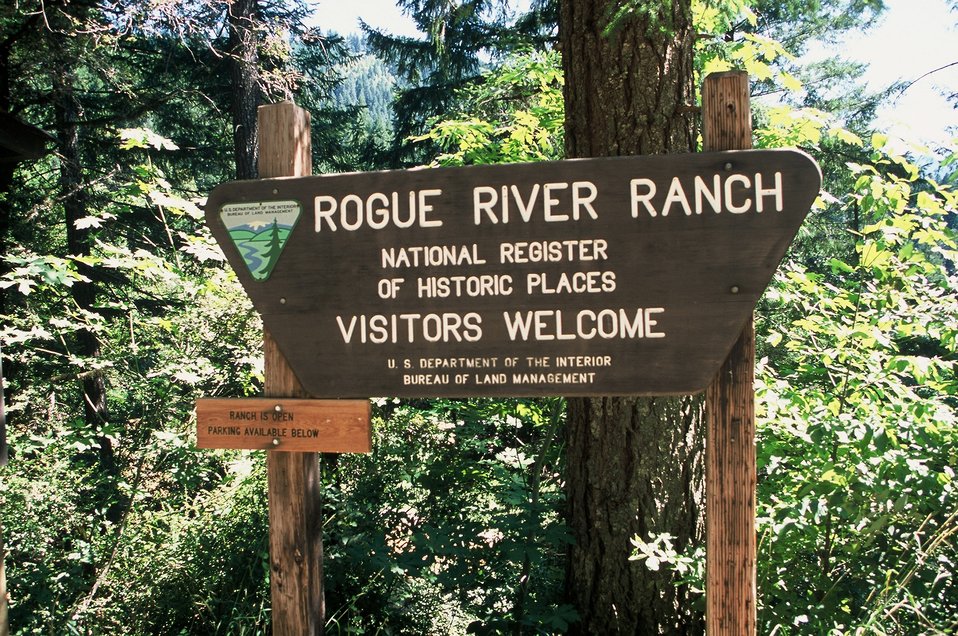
Signage to Rogue River Ranch